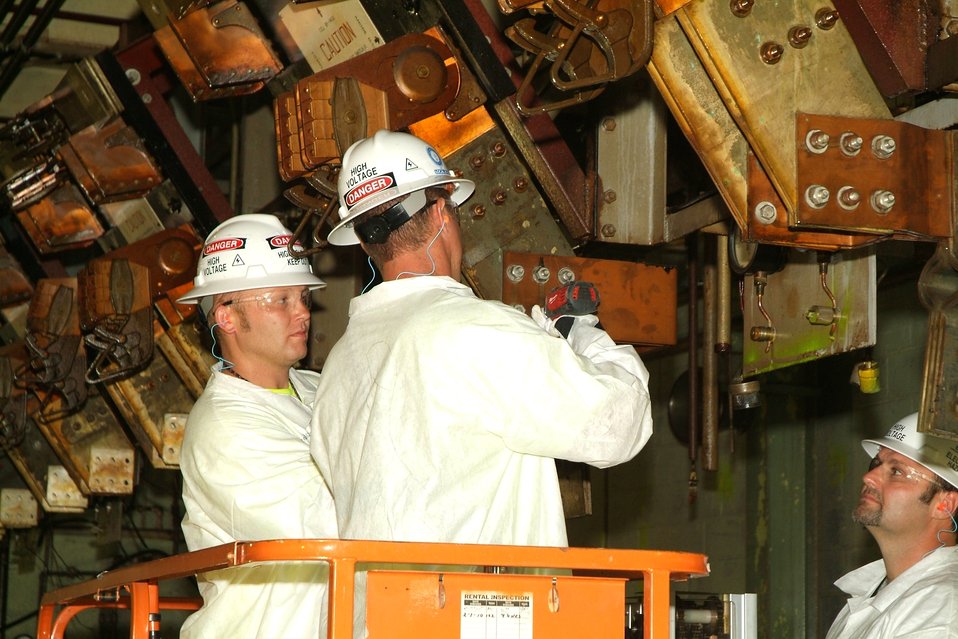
C-410 bus bar removal

Having saved millions of dollars cleaning up and tearing down an old smelter in September 2010, Recovery Act workers at the Paducah Site are moving on to demolish other closed facilities by September 2011.